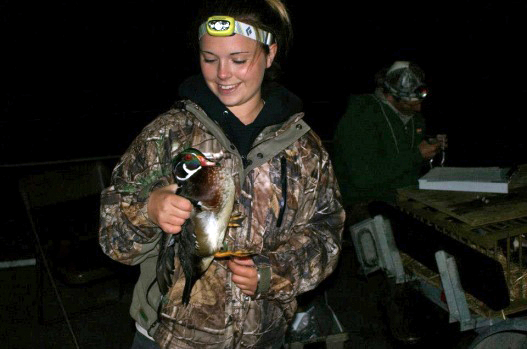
Wood duck banding

Mason Neck National Wildlife Refuge, VA.